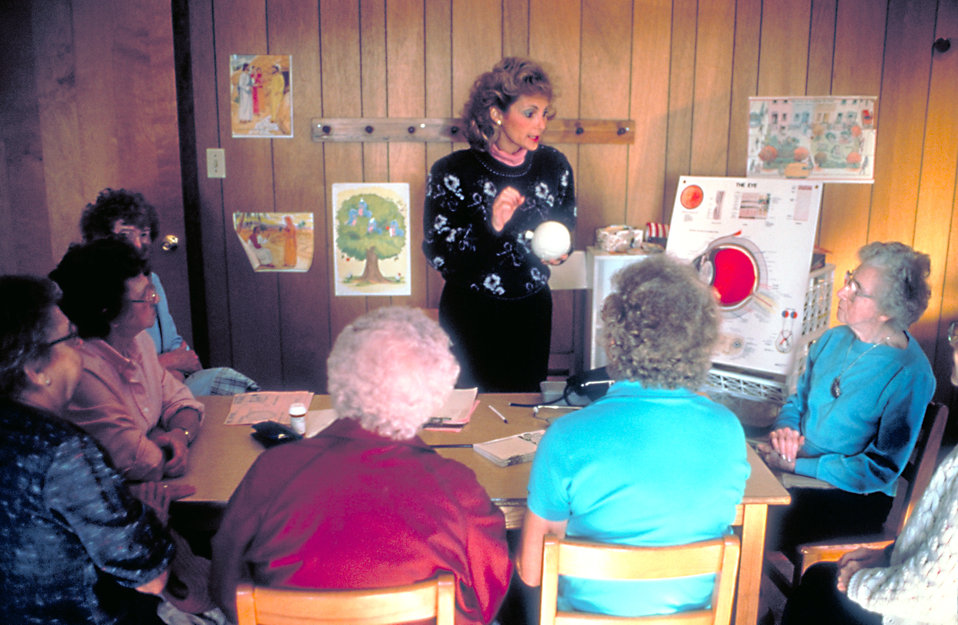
Elderly women learning about eye diseases.